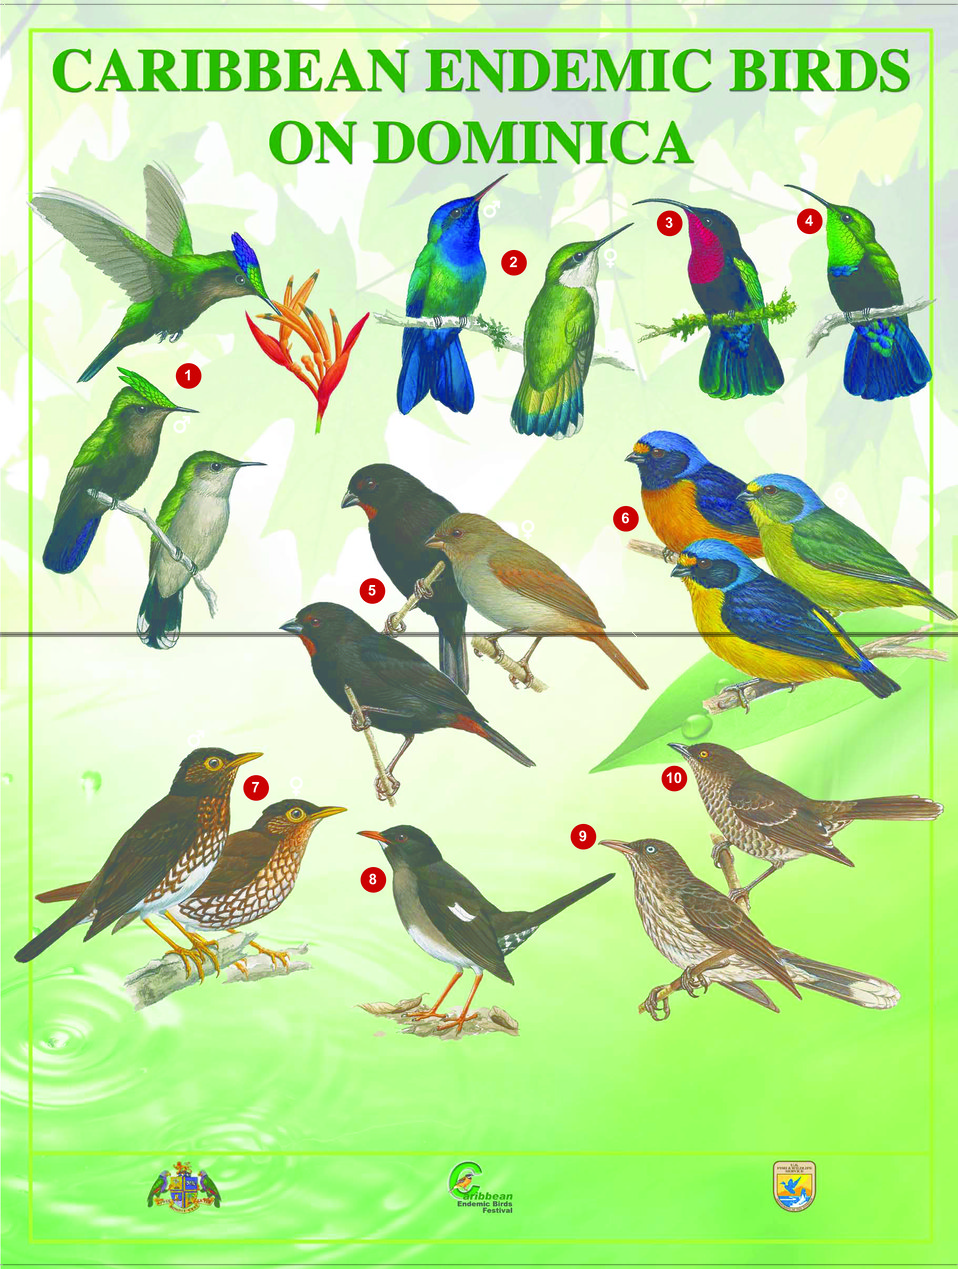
Identification guide for Caribbean endemic birds on Dominica.